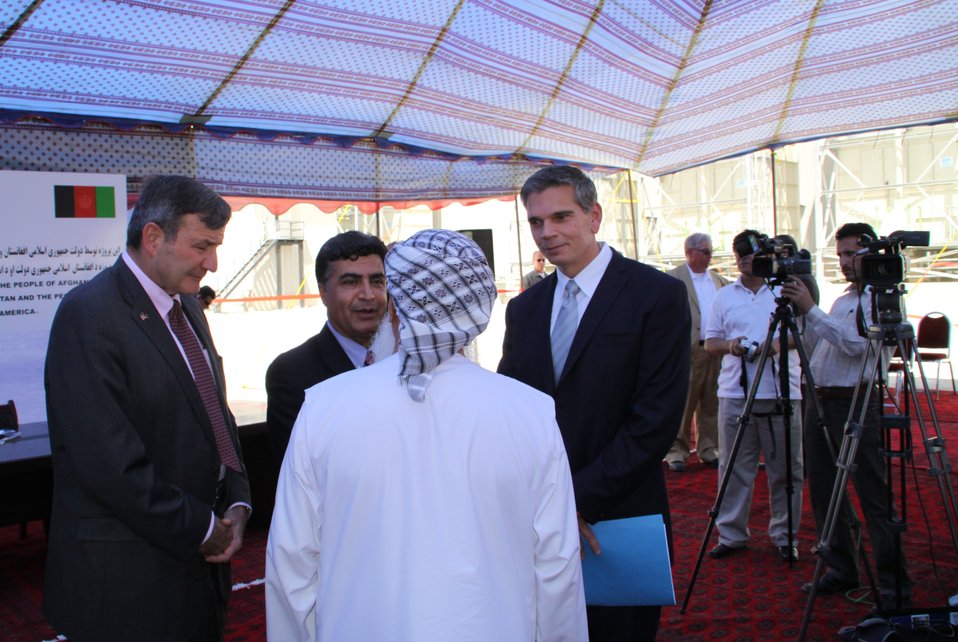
105 MW Tarakhil Power Plant Handover